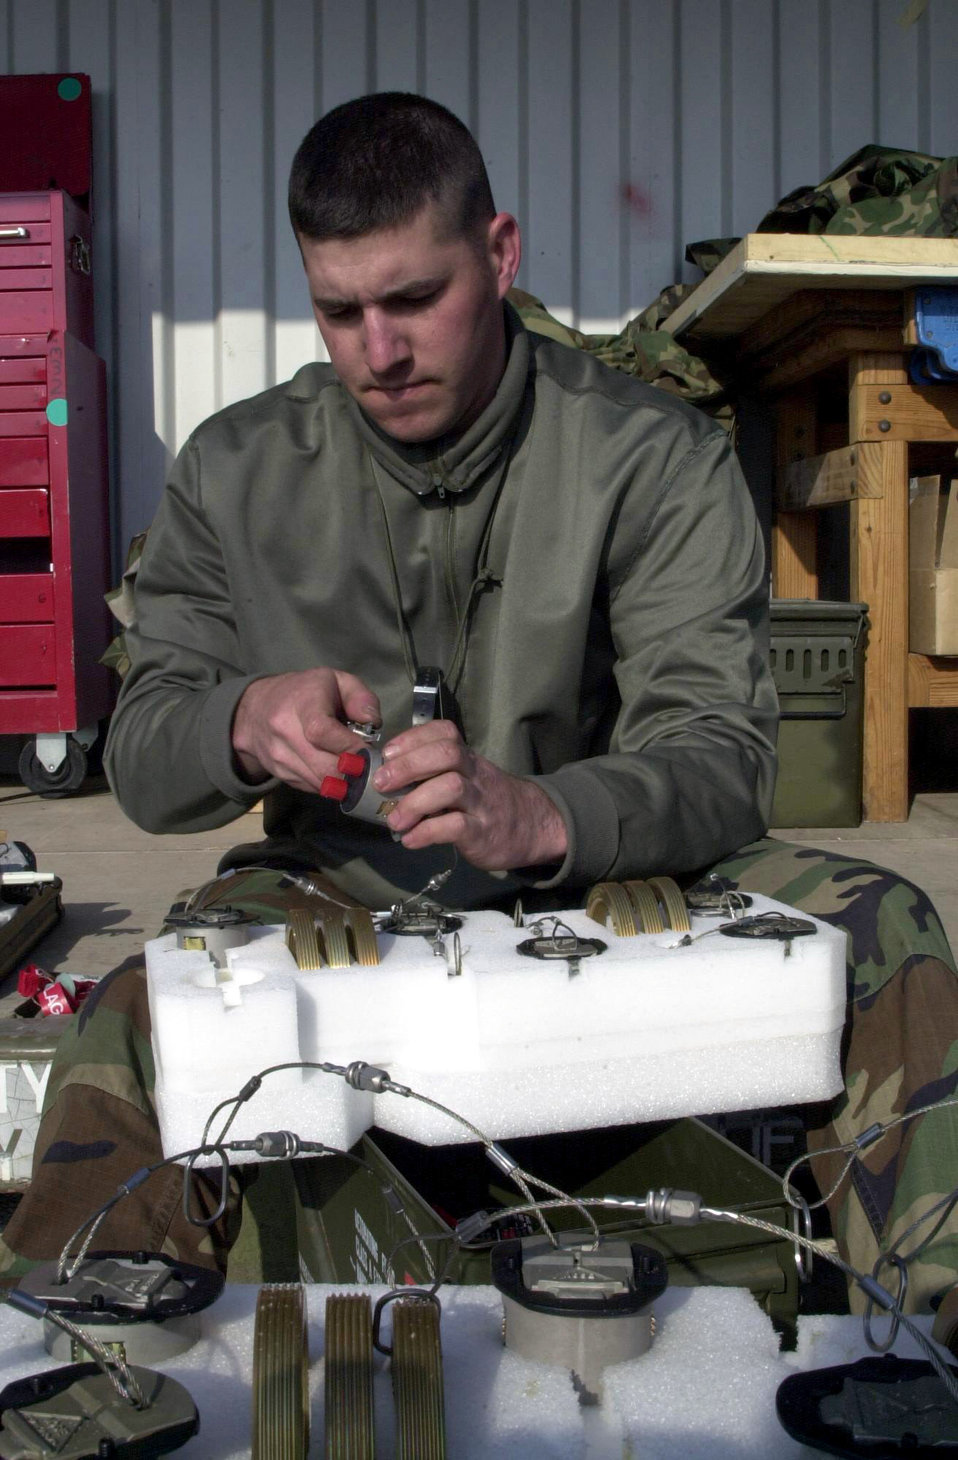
Different classroom

OPERATION IRAQI FEEDOM - Tech. Sgt. James Sutton, 5th Expeditionary Maintenance Squadron Munitions Flight, builds a fuze for the GBU-31 Joint Direct Attack Munition March 23. Sutton is an instructor at the Air Force Combat Ammunition Center at Beale Air Force Base, Calif. Currently the schoolhouse is closed and Ammo troops assigned to the 9th Munitions Squadron have deployed in support of Operation Iraqi Freedom.